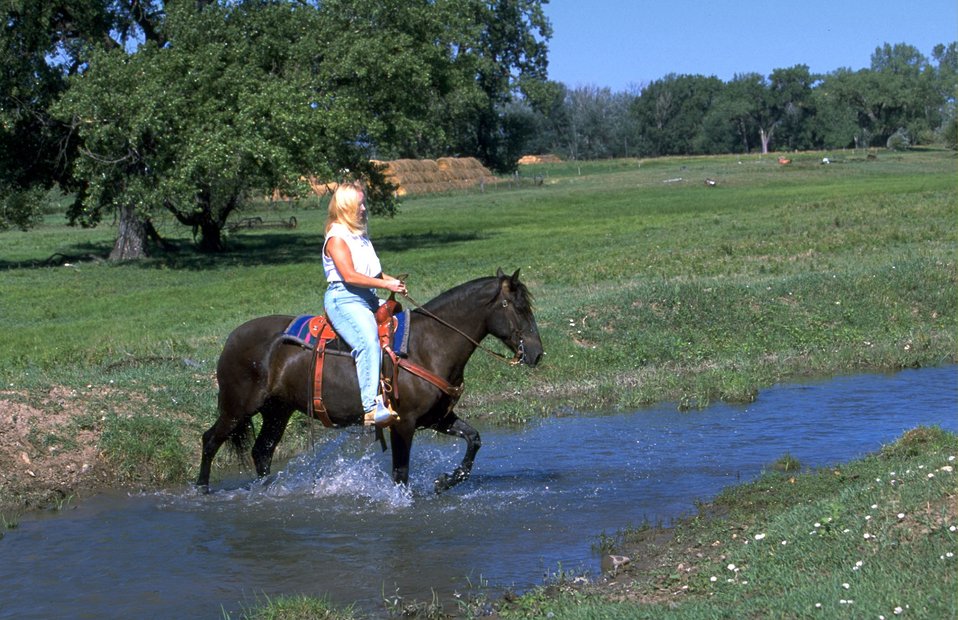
Black Horse crossing Creek